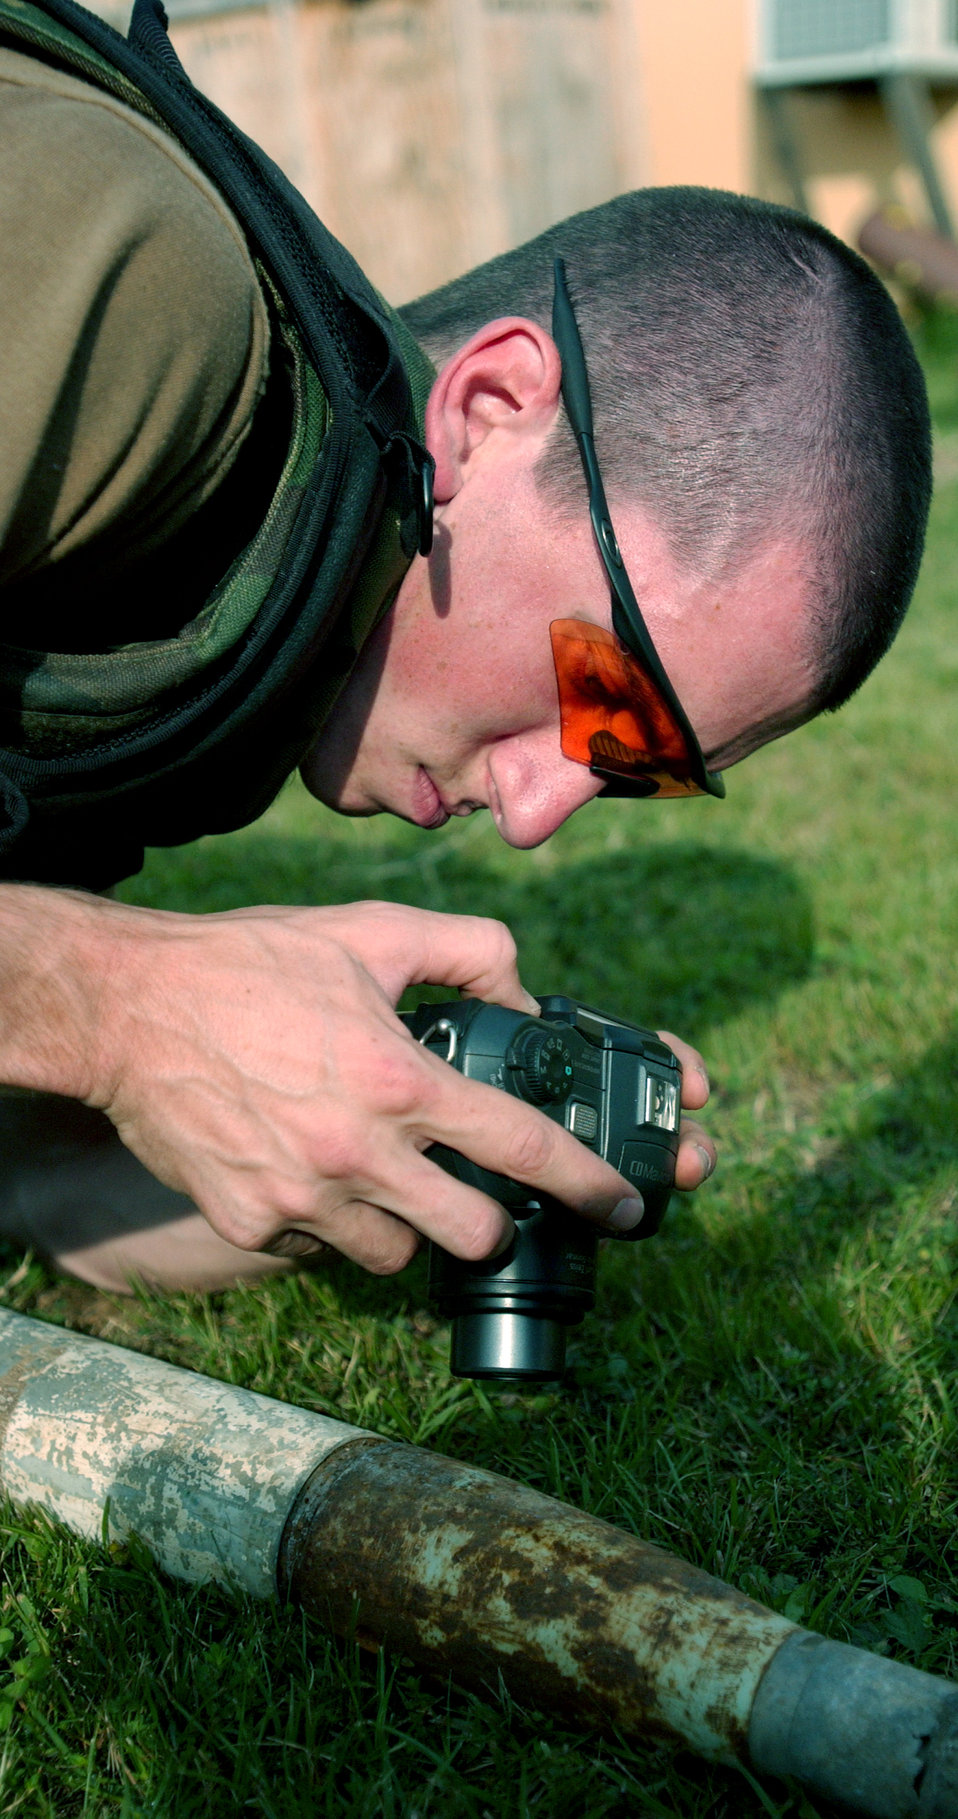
A sharp eye

AVIANO AIR BASE, Italy -- Airman 1st Class Jedd Lucas closely observes unexploded ordnance during training here Aug. 24. The Explosive Ordnance Disposal flight has these types of training exercises bi- weekly. Airman Jedd is a member of the EOD flight assigned to the 31st Civil Engineer Squadron.